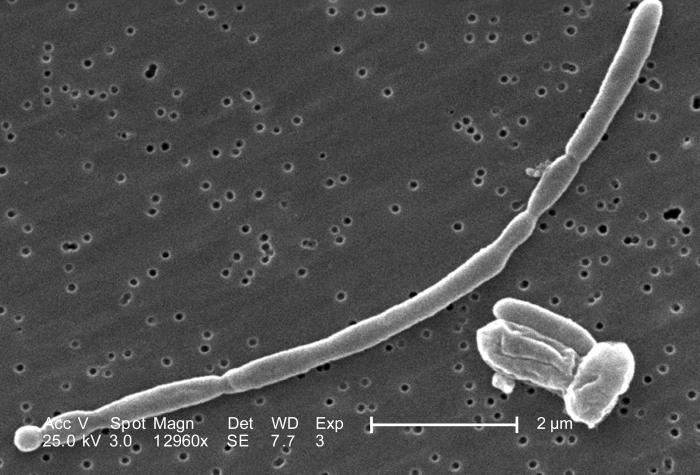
At a high magnification of 12,960X, this scanning electron micrograph (SEM) revealed some of the morphologic details displayed by a number of joined Gram-negative Escherichia coli bacteria. These bacteria were members of the strain, 0:169 H41 ETEC (Enterotoxigenic E. coli).Enterotoxigenic E. coli, a common cause of bacterial diarrhea...